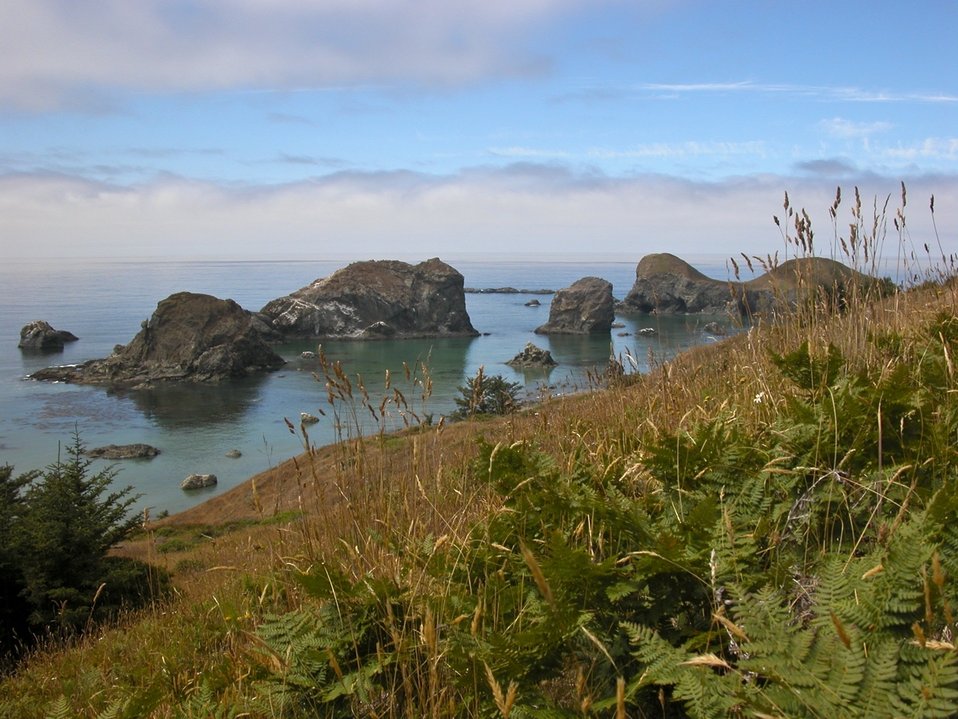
Crook Point

View of seabird colonies from the Crook Point Unit of Oregon Islands National Wildlife Refuge, OR